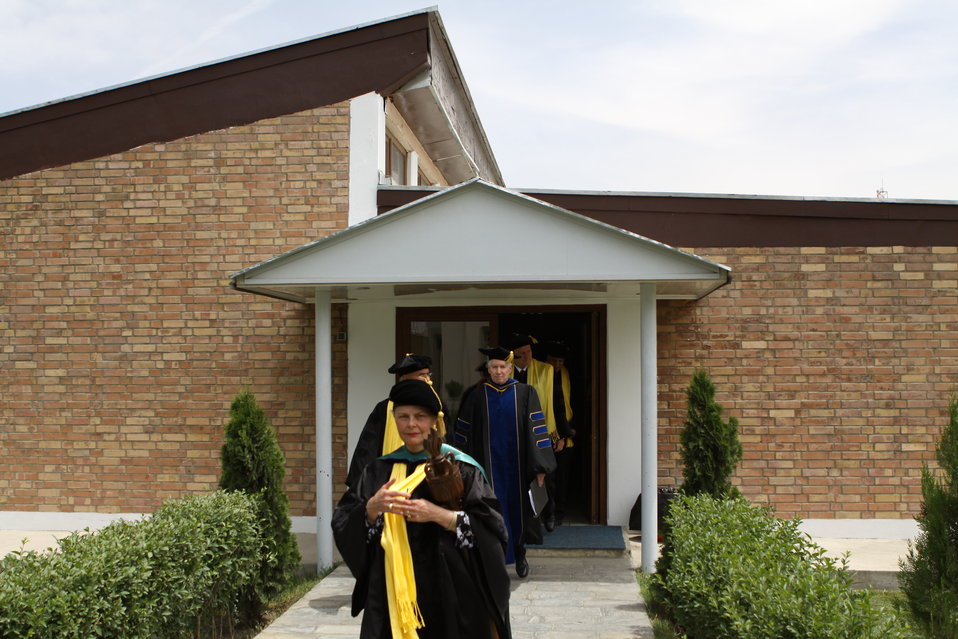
100526 AUAF Graduation 085